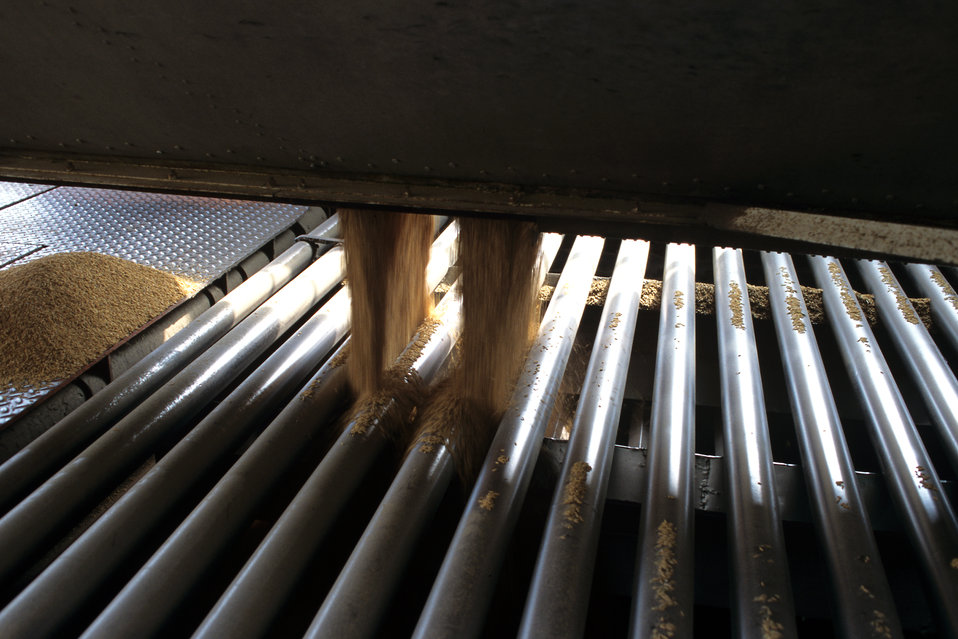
Bulk rice is unloaded from a hopper bottom grain trailer dumping into an elevator dump pit at Riceland Foods Incorporated in Jonesboro, AR on Sept. 1, 1996. USDA GIPSA offers inspection services for rice upon request on a fee basis for both domestic and export shipments. Rice inspection services are divided into two basic types: inspection for grade or factor analysis without grade. Inspection for grade involves analyzing the sample according to the quality factors listed in the Official U.S. Standards for Rice and certifying the applicable numeric grade designation, the quality factors responsible for the grade assignment, and any other quality factors the customer requests. Factor analysis involves the analysis of quality factors requested by the applicant for service without the certification of an applicable numeric grade designation. Factors requested by applicants might include free fatty acid, total oil and free fatty acid, stain as a count, broken in brown rice, false smut, and aflatoxin. Official inspections result in the issuance of an official certificate, which reports the grade of the rice. U.S. and international buyers rely on official USDA inspection certificates to provide accurate, official descriptions of the grade, class, and condition of the inspected rice. Official certificates are receivable by all offices and all courts of the United States as prima facie evidence of the truth of the statements stated thereon.